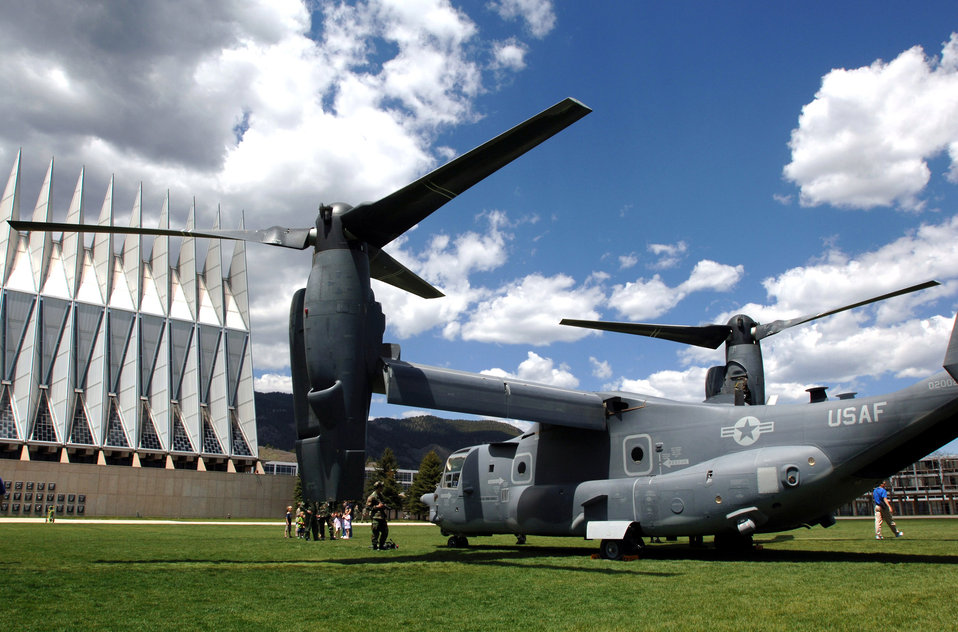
Osprey comes for a visit

A CV-22 Osprey sits on display at the U.S. Air Force Academy May 11. Cadets in the Department of Aeronautical Engineering's High-Performance Computing Research Center contributed to making this aircraft an operational reality through their research in computational fluid dynamics. The famed Academy chapel is in the background.